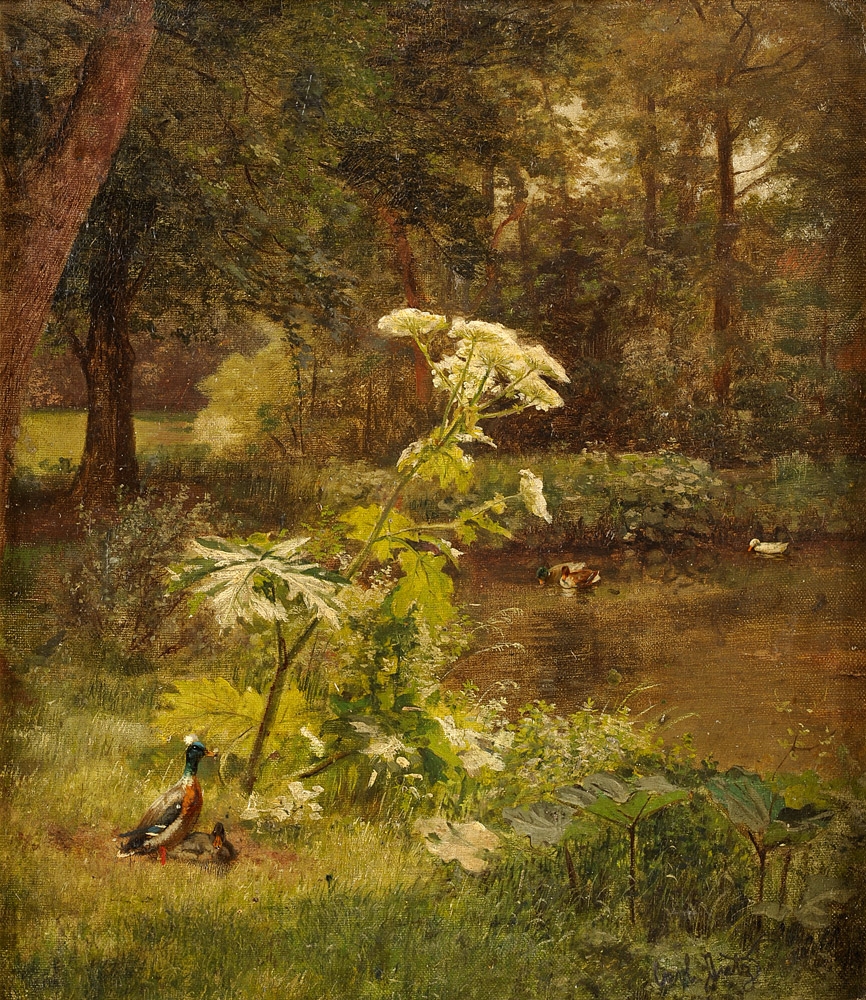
Carl Jutz Waldsee mit Enten